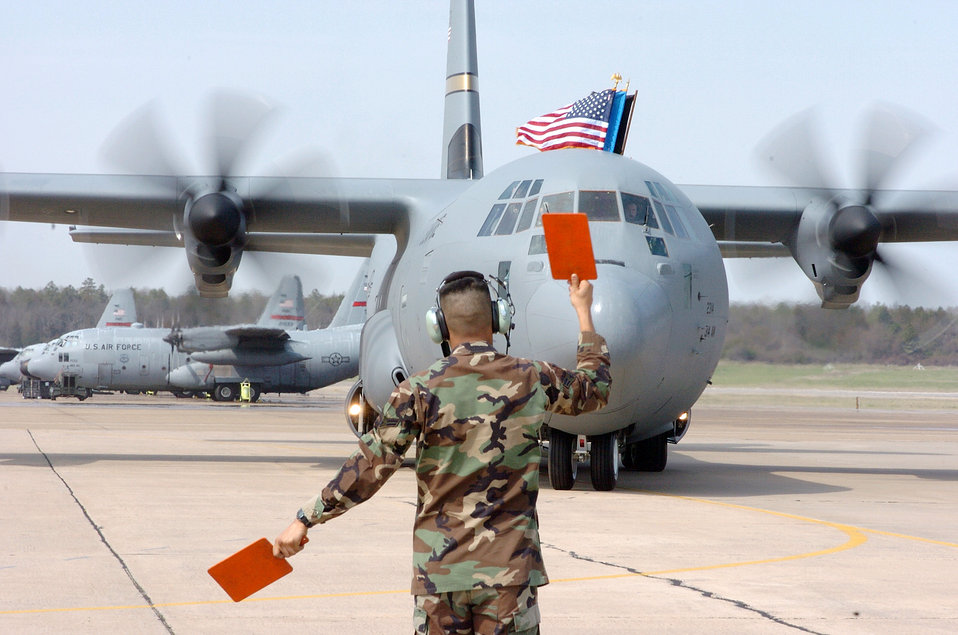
The C-130J

LITTLE ROCK AIR FORCE BASE, Ark. (AFPN) -- Airman 1st Class Antonio Perez marshals in the first active-duty C-130J Hercules here March 19. Air Force officials are standing by the aircraft despite a recent Department of Defense inspector general report criticizing the program.